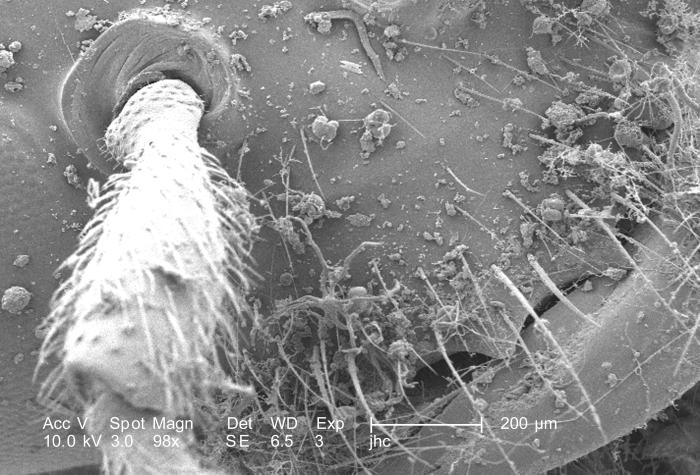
Revealed using a scanning electron microscope (SEM), at a magnification of 98X, were the exoskeletal ultrastructural characteristics of this unidentified debris-laden insect, which had been discovered deceased in the suburbs of Decatur, Georgia. Depicted in this particular image was a section of the insect's head region where one of the organism's two antennae could be seen emanating from its forehead.